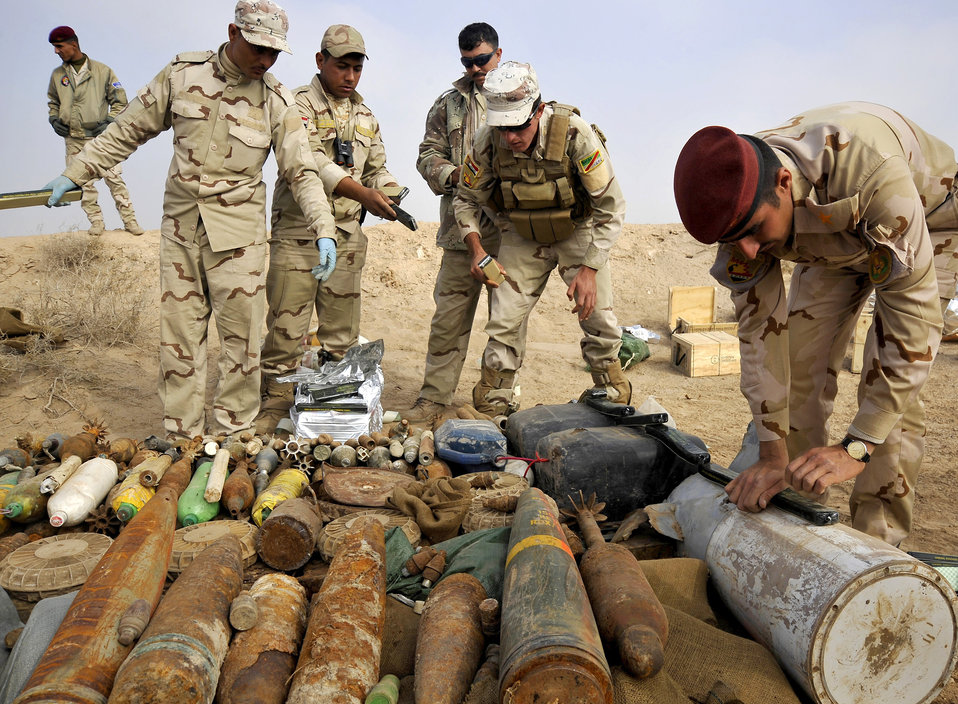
Iraqi army soldiers place C-4 explosives on a collection of loose ordnance in preparation for a control detonation, Nov. 23, 2009 at Mahmudiyah, Iraq. The purpose of the control detonation is to mitigate explosives hazards and limit the enemy's war-fighting capabilities in Iraq.